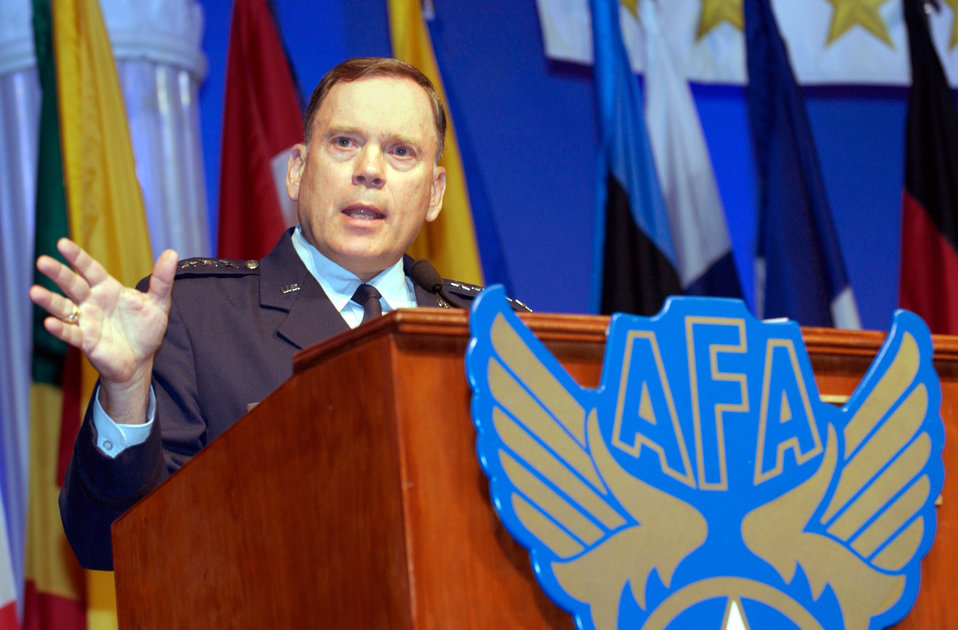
Air Power Symposium

WASHINGTON -- Air Force Chief of Staff Gen. John P. Jumper addresses an Air Power Symposium at the Air Force Association's annual convention here Sept. 16. He spoke of the importance of continuing to build an expeditionary Air Force, the importance of unmanned aerial vehicles, and the making of today's heroes. More than 90 international air chiefs in the audience were attending the Global Air Chief's Conference running concurrently with the convention.